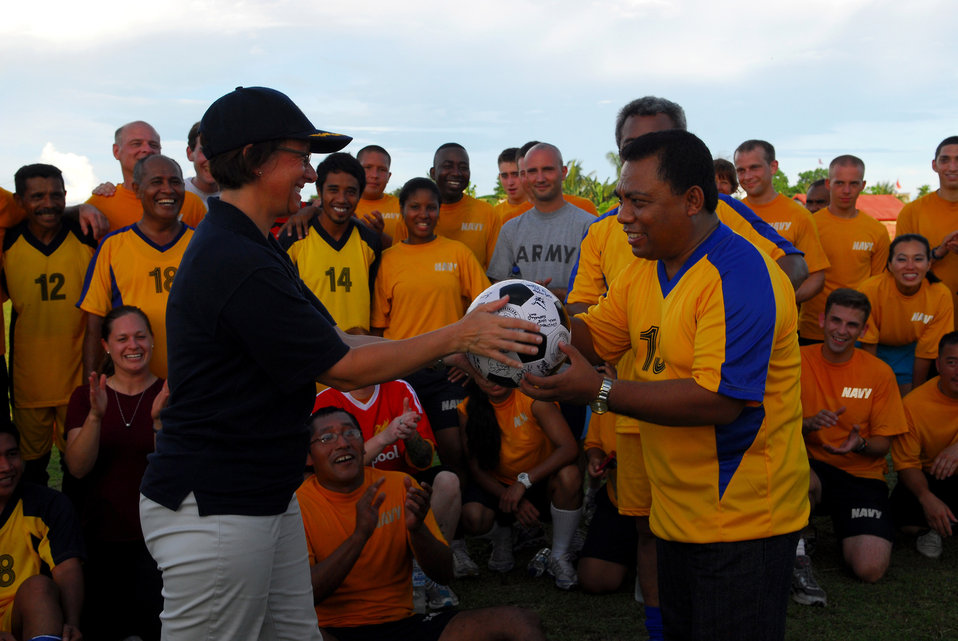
PP2010 Commander Capt. Franchetti Gives an Indonesian Soccer Team Representative a Signed Ball

Pacific Partnership 2010 Commander Capt. Lisa M. Franchetti gives an Indonesian soccer team representative a signed soccer ball following a soccer match between host nation Indonesians and Sailors during a community service event in Tobelo, Indonesia, on July 15, 2010. The Military Sealift Command hospital ship USNS Mercy (T-AH 19) is in the North Maluku Islands conducting Pacific Partnership 2010, the fifth in a series of annual U.S. Pacific Fleet endeavors conducted in Indonesia as a disaster relief exercise aimed at strengthening regional partnerships.